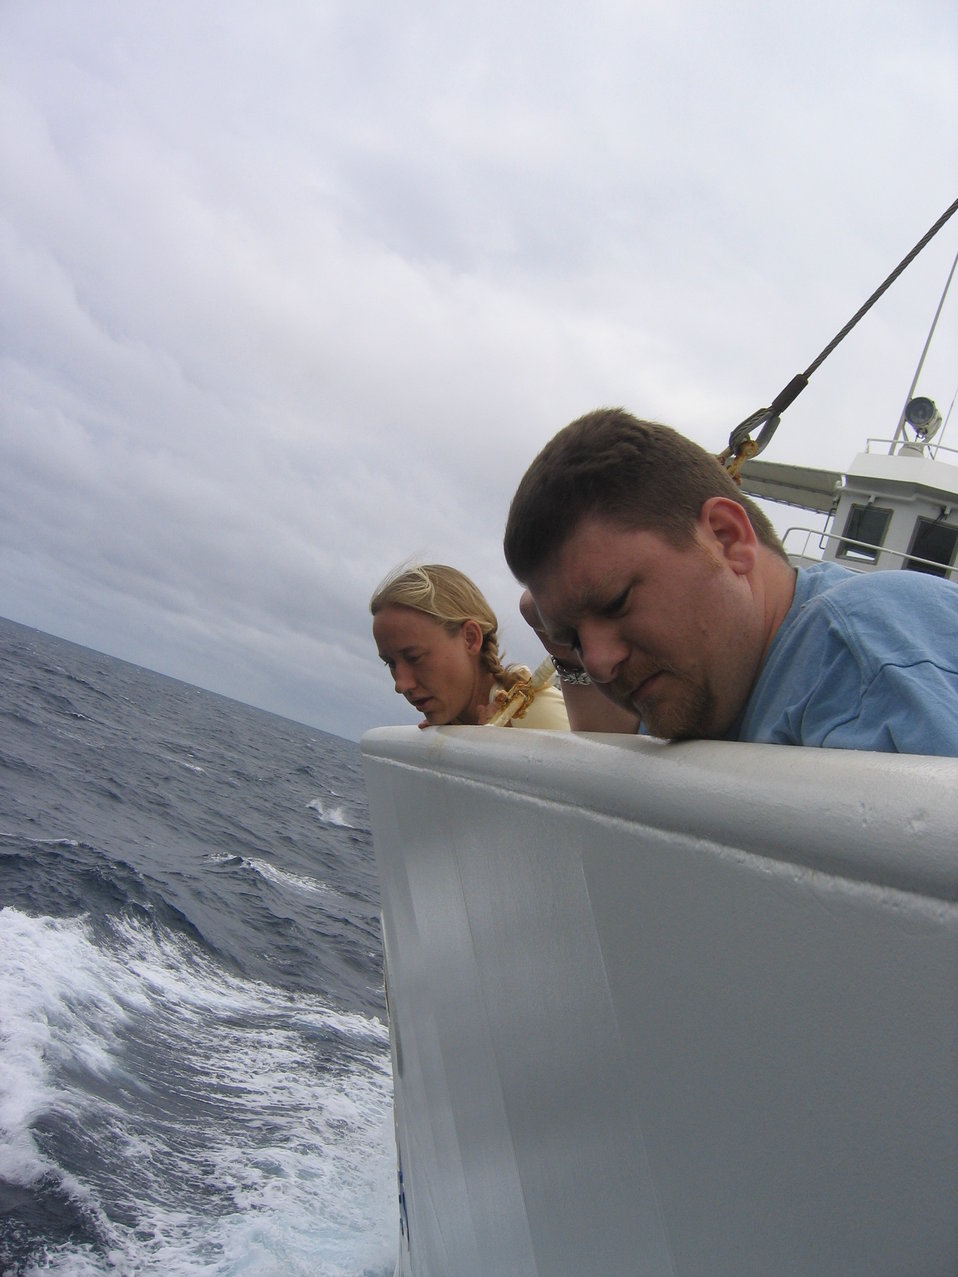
Crew of the THOMAS JEFFERSON captivated by the spectacle of porpoise riding the ship's bow wave.